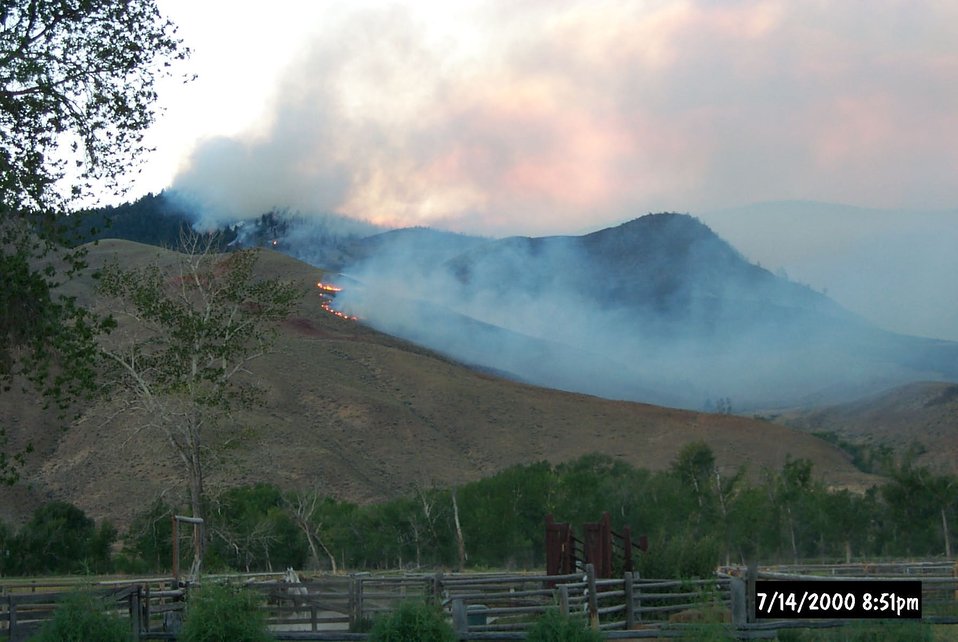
Smoke Fire Fenster Fire Salmon Field Office USRD Upper Snake River District